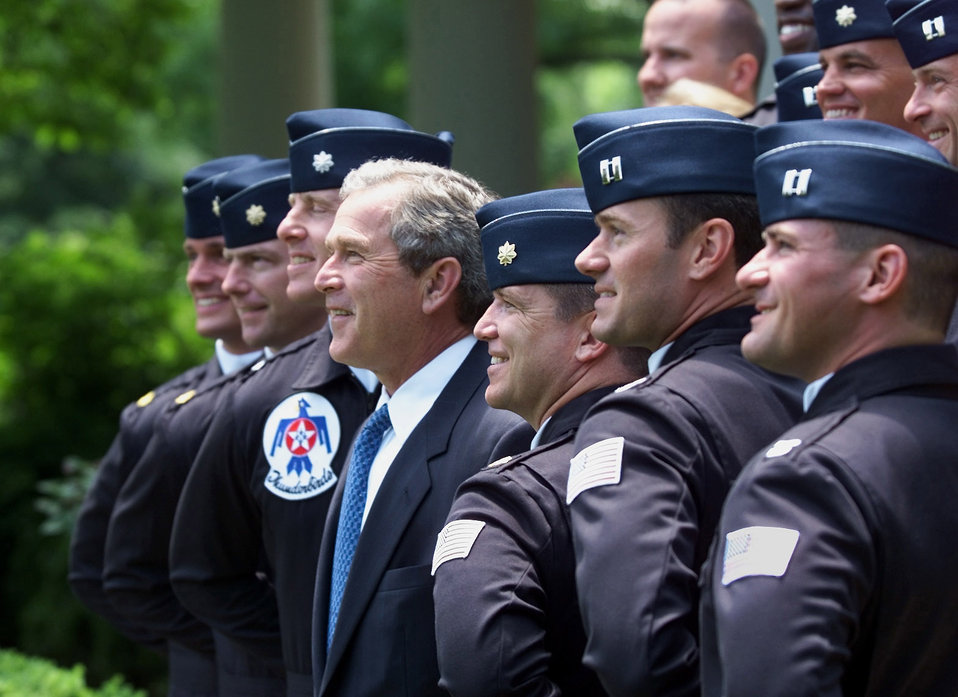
Thunderbirds meet the boss

WASHINGTON D.C. -- President George W. Bush met with the U.S. Air Force Thunderbirds Air Demonstration Squadron at the White House, May 16, 2001.